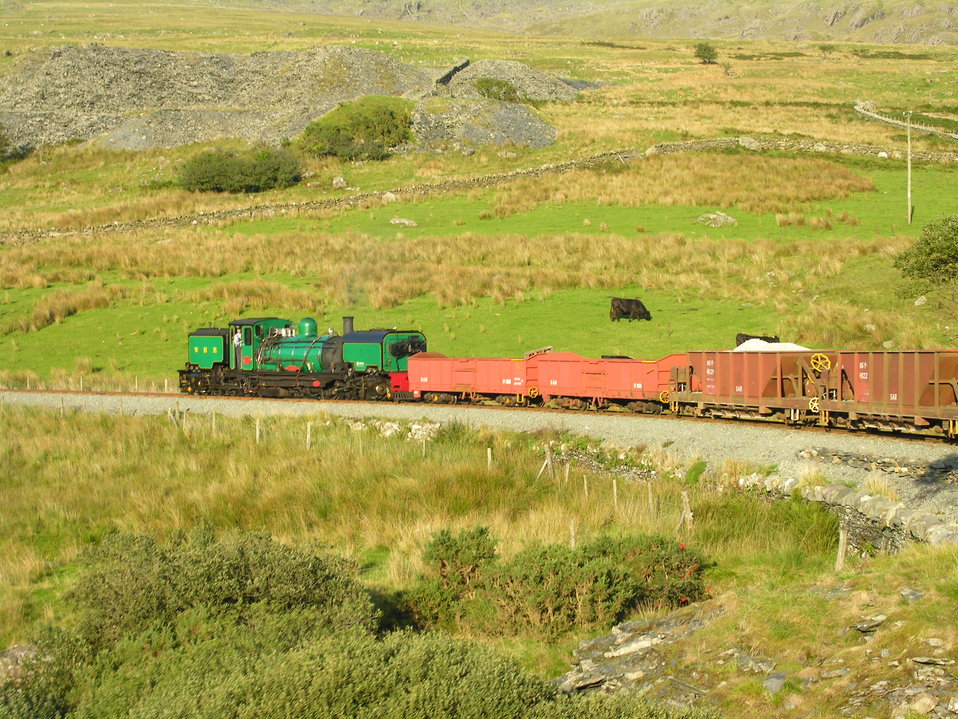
Photograph by vanoord. SAR class NGG16 138 with goods train on the Welsh Highland Railway